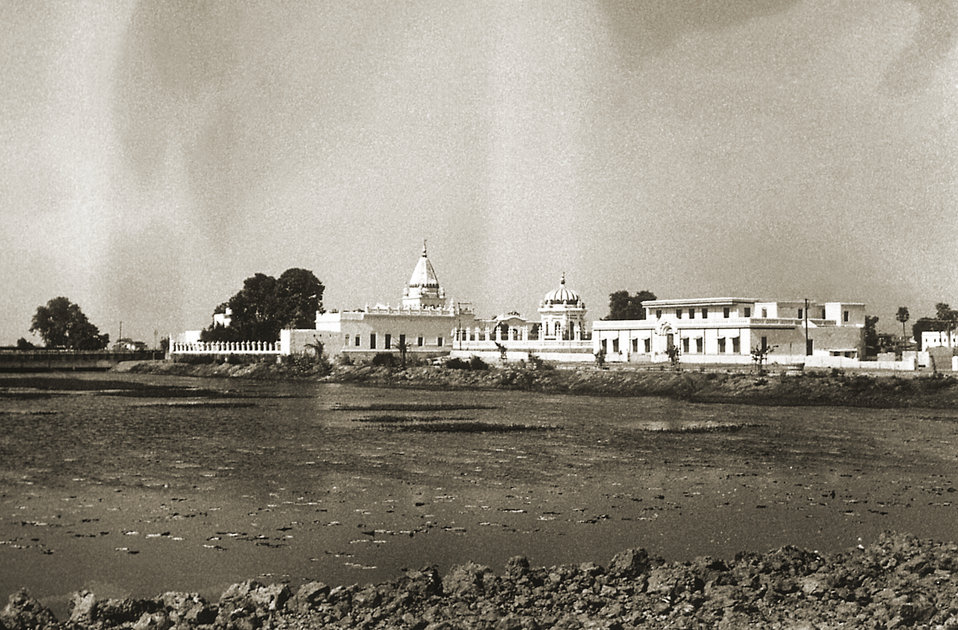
This 1975 image depicts the holy site, or Pawapuri, also known as Apapuri, located in the Nalanda district of the State of Bihar, India. It is the historic site at which exists the shrine of the Jain religion. In this view you can see the Jain Temple situated in the center of a beautiful lake.